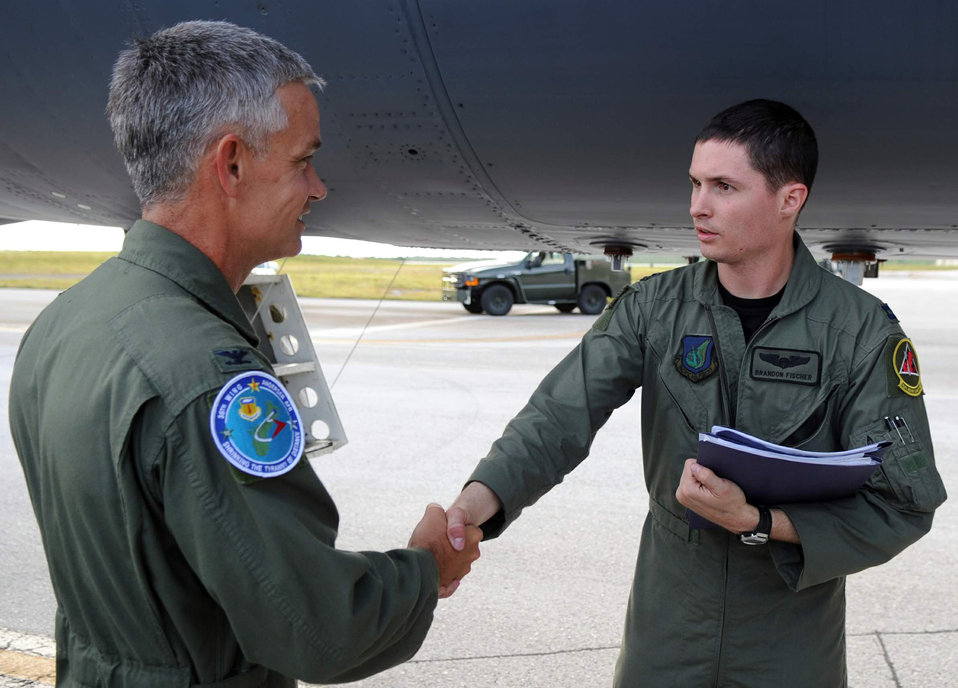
Barksdale bombers arrive at Andersen

Col. Tod Fingal greets Capt. Brandon Fischer after a 17-hour flight May 30 from Barksdale Air Force Base, La., to Andersen Air Force Base, Guam. Three B-52 Stratofortress bombers arrived here May 30. Colonel Fingal is the 36th Operations Group commander and Captain Fischer is a 96th Expeditionary Bomb Squadron aircraft commander.